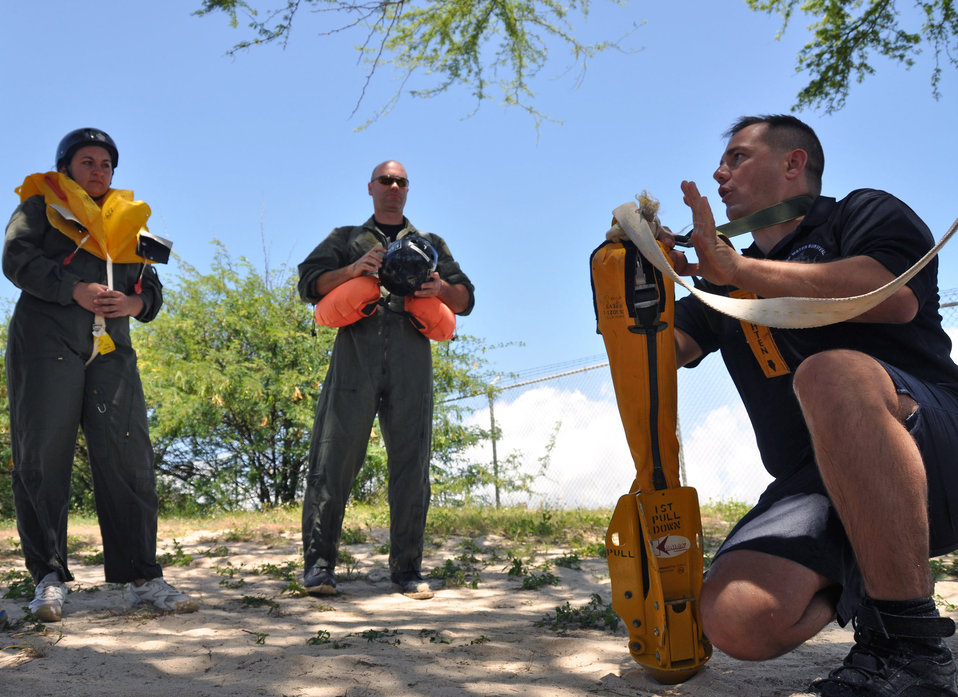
SERE instructors ensure water survival skills

Tech. Sgt. Sherwood Brown briefs an aircrew from Hickam Air Force Base, Hawaii, April 6 on proper procedures when throwing an anchor from their raft during refresher water survival training. Sergeant Brown is an Air Force survival evasion resistance escape specialist.